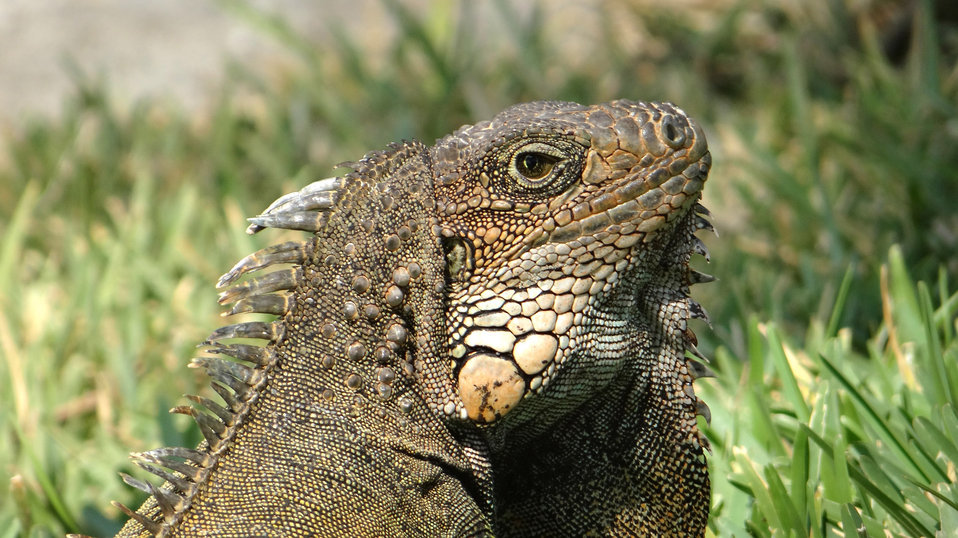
Iguanas in ecuador

Precious ecuadorian iguanas.